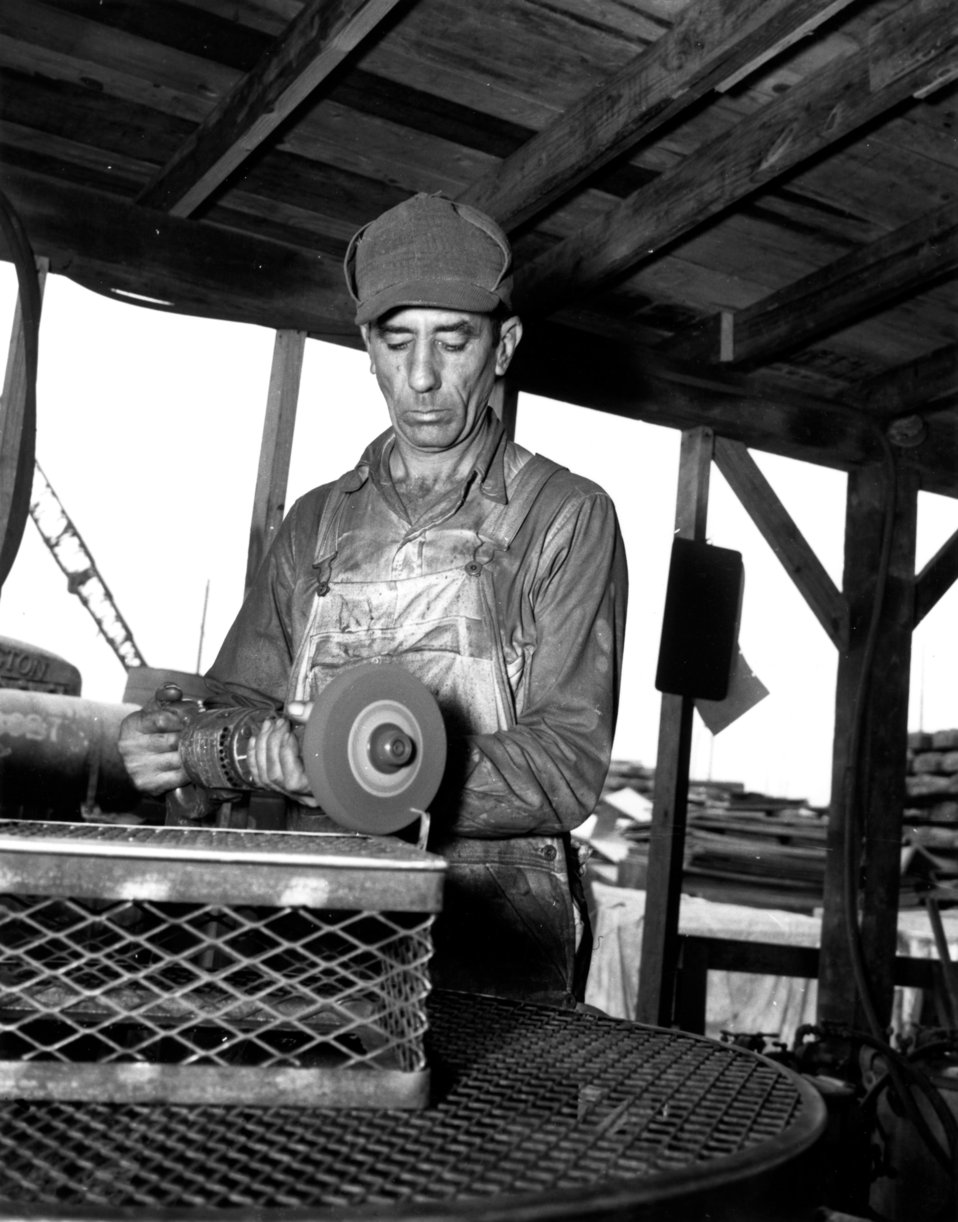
Business activity at Oak Ridge